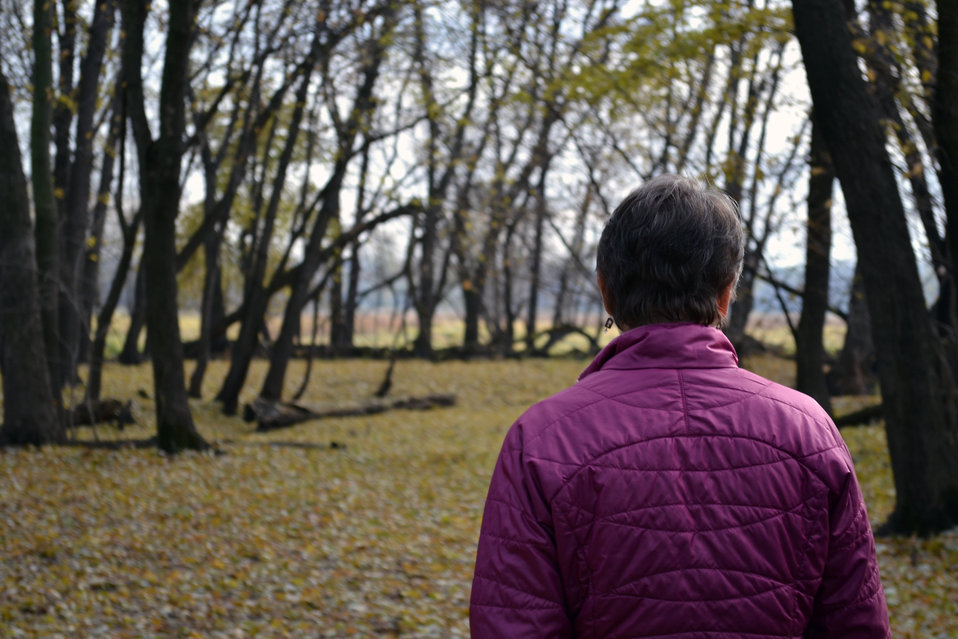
Visiting Minnesota Valley National Wildlife Refuge

Secretary Sally Jewell walking along the Minnesota River floodplain and woodlands at Minnesota Valley National Wildlife Refuge.